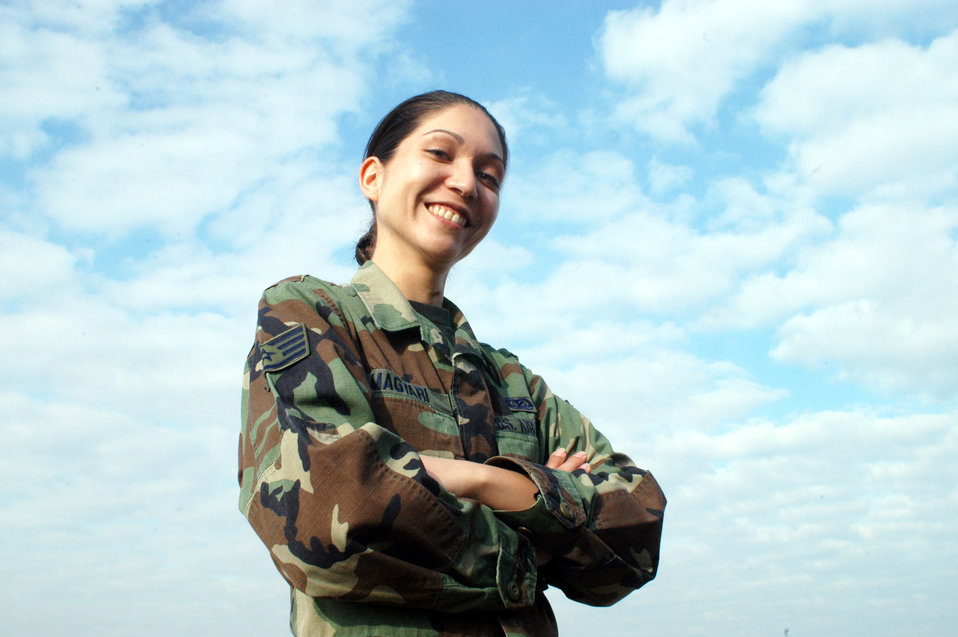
Sergeant selected for flight attendant program

ROBINS AIR FORCE BASE, Ga. -- Staff Sgt. Melissa Magyari is one of 10 active-duty servicemembers recently selected for the Air Force Flight Attendant program. The 19th Air Refueling Group command section information manager will be greeting and serving meals to the vice president and his wife, governors, congressmen and other distinguished visitors aboard C-32 and C-40 aircraft.